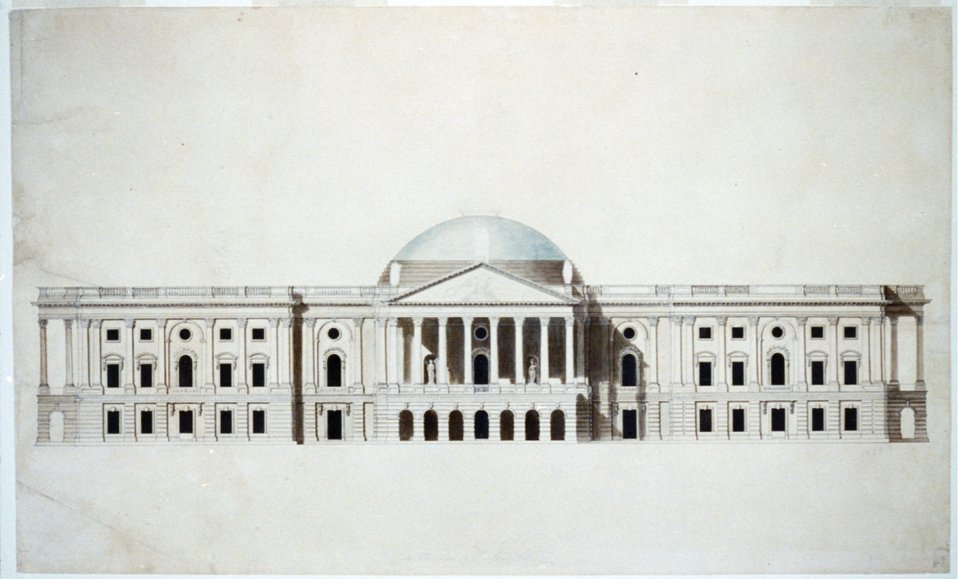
Thornton's Capitol Winning Design

East elevation of the Captiol ca. 1796.

An amateur architect from the British West Indies, Dr. William Thornton was awarded $500 and a city lot for his design of the Capitol. Today, he is honored as the first architect of the Capitol.